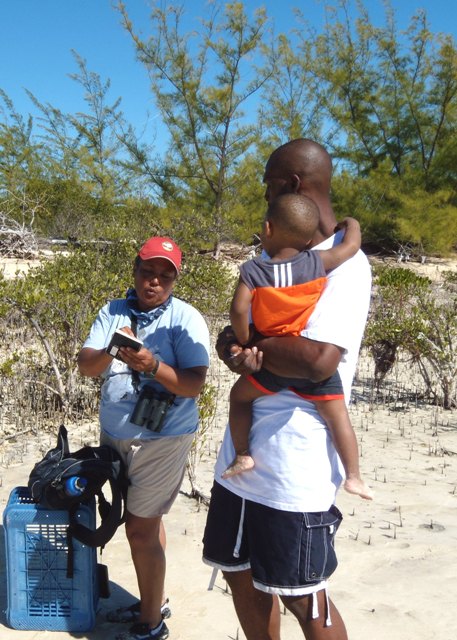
The Neugyen family looking at a piping plover flock

Working on New Providence Island.